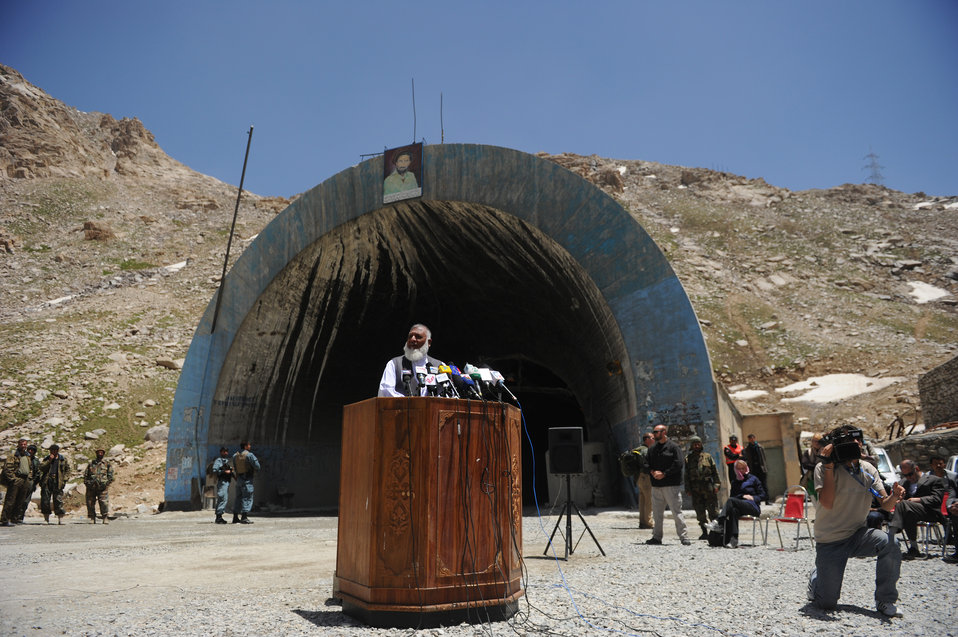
Baghlan Governor Mohammad Akbar Barakzai makes remarks during a ceremony to mark the beginning of renovations at the Salang Tunnel on the border of Parwan and Baghlan Provinces, Afghanistan, on Wednesday, June 15, 2011. (S.K.Vemmer/Department of State)